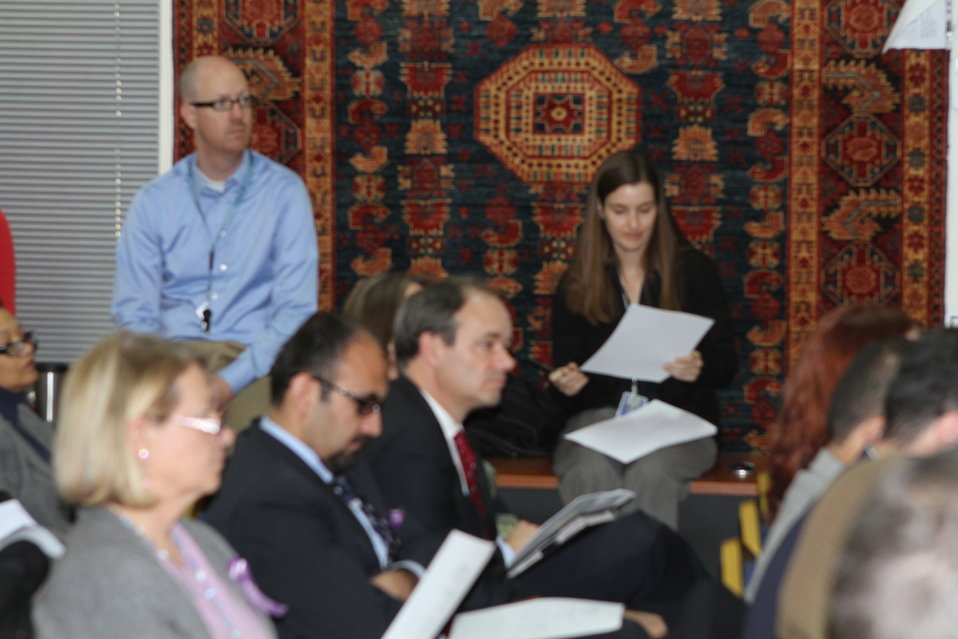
IMG 2810Presentation of the ACTA Civil Society analysis of the FY 1392 Afghan national budget